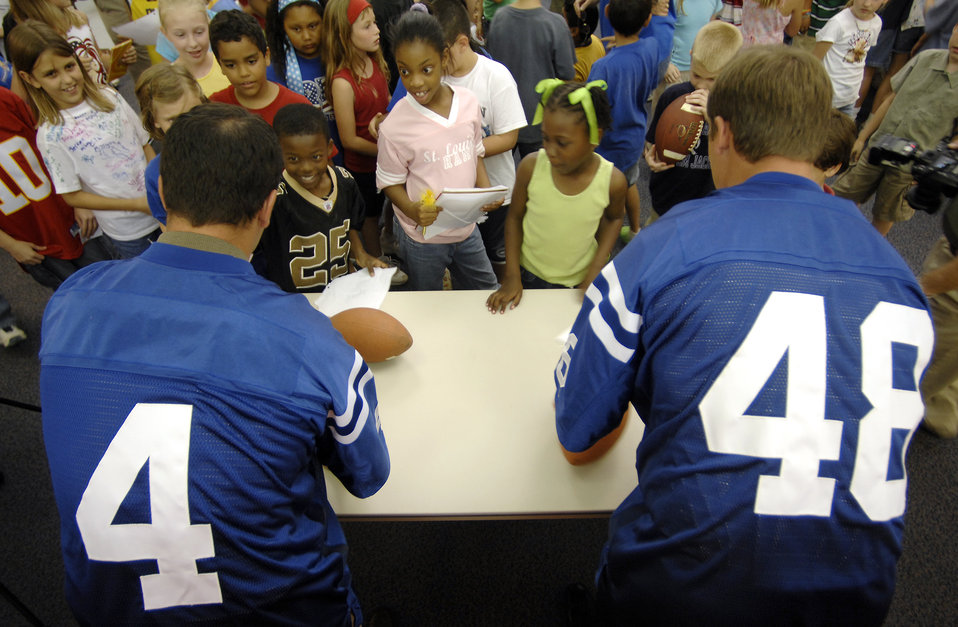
Indianapolis Colts visit Randolph Air Force Base

Indianapolis Colts kicker Adam Vinatieri (left) and long snapper Justin Snow sign autographs for students at Randolph Elementary School on Randolph Air Force Base, Texas, June 1. Colts team members spent the day visiting with base personnel and school children, enhancing the already strong relationship between the team and the Air Force.